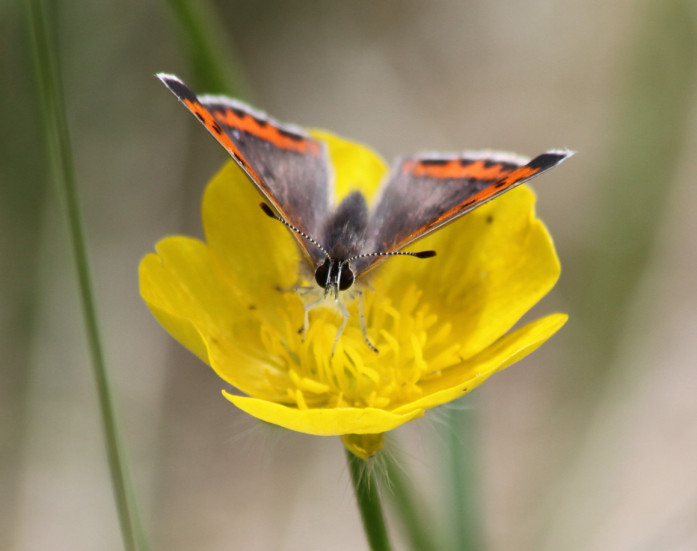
American copper butterfly

Maine Coastal Islands National Wildlife Refuge